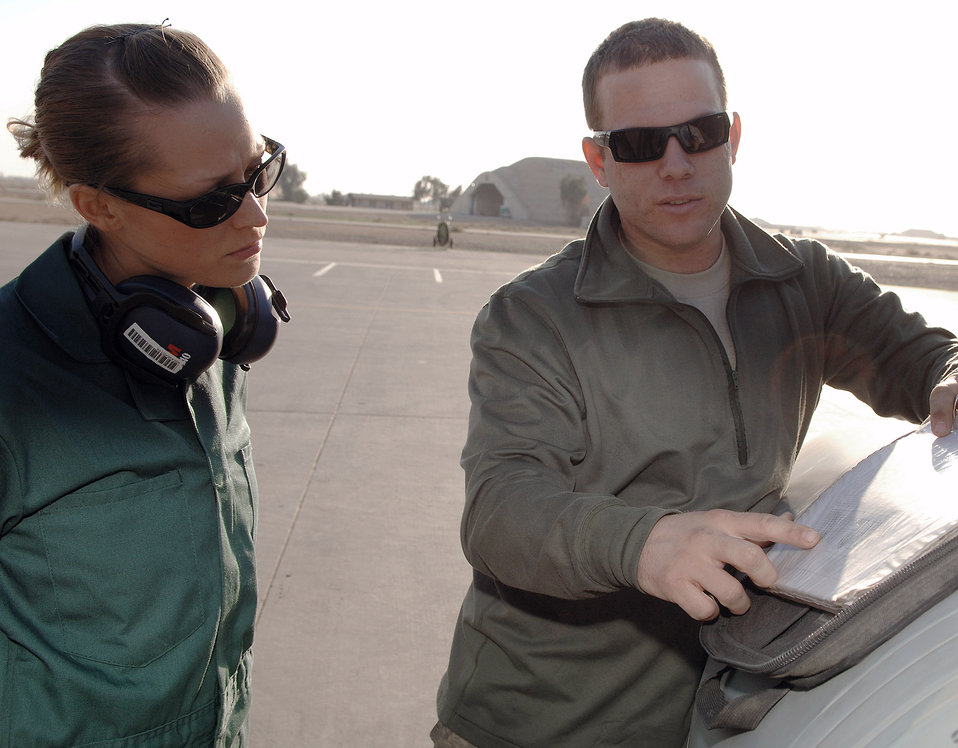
Medics, maintainers test skills at alternative careers

Staff Sgt. Kelly Lomeli reviews the maintenance records of an F-16 Fighting Falcon with Senior Airman Timothy Loop Dec. 9 at Joint Base Balad, Iraq. Airman Loop, a 332nd Expeditionary Aircraft Maintenance Squadron crew chief, taught Sergeant Lomeli basic aircraft knowledge and how to marshal the aircraft out for takeoff. This was part of the Medics to Maintainers program where Sergeant Lomeli volunteered to work on the flightline. Sergeant Lomeli is the the 332nd Expeditionary Medical Group NCO in charge of the medical equipment management office. She is a native of Green Bay, Wis., deployed from Lackland Air Force Base, Texas.